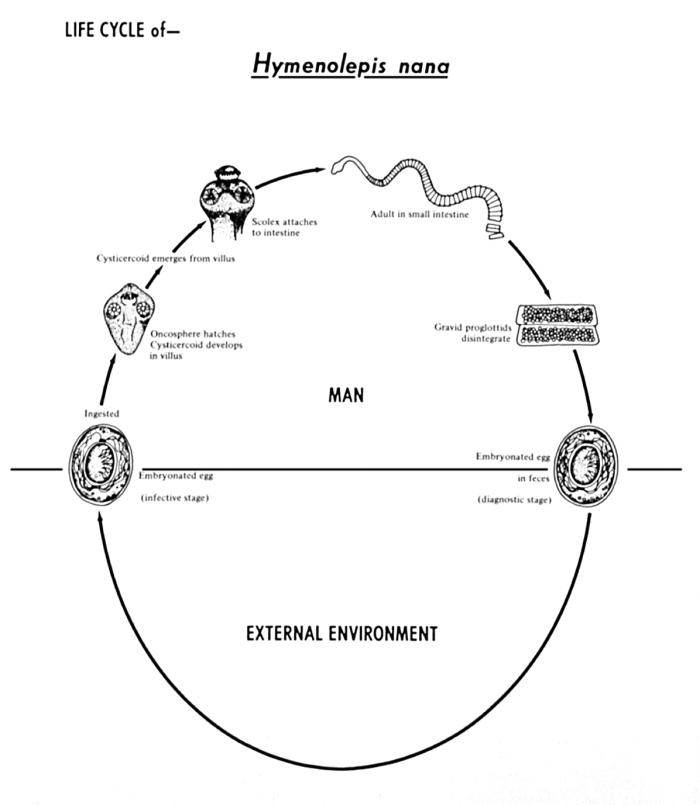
This diagram depicts the various stages in the life cycle of the dwarf tapeworm, Hymenolepis nana, a cestode.